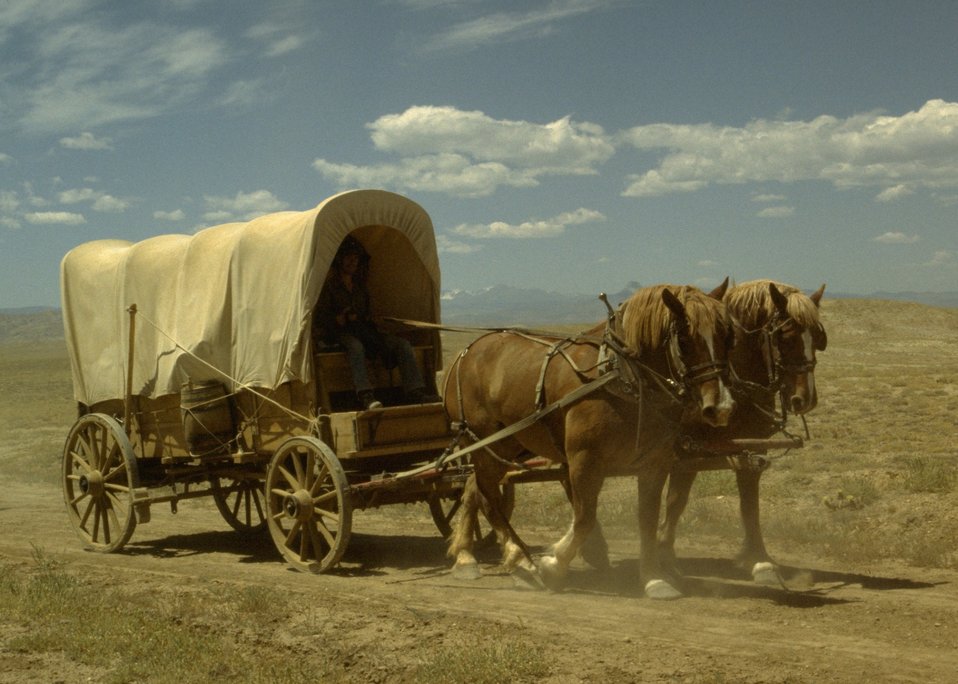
Horsedrawn wagon .